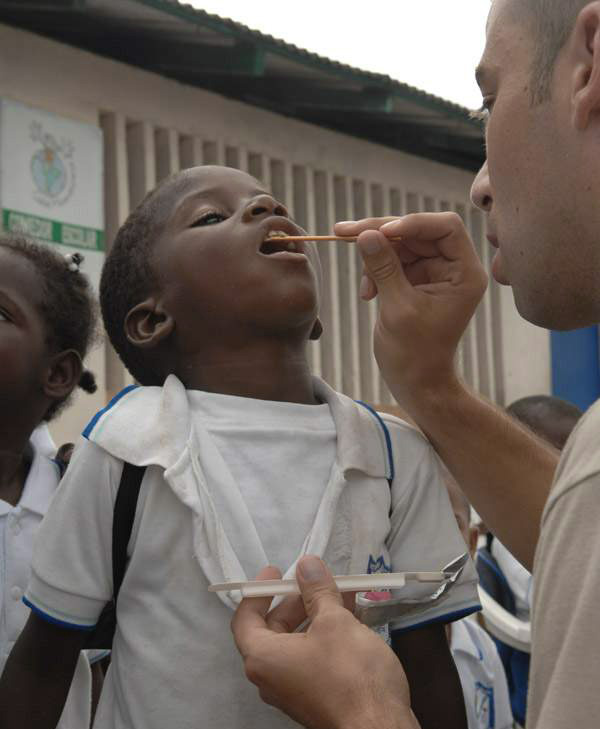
Photo essay: Show and care

Senior Airman David Evans assists dental professionals with fluoride treatment after a band performance June 10 at Tumaco, Colombia. The band performed for the students, and then the children were taught the importance of dental hygiene at the Cuidadela Mixtra Escuela as part of Continuing Promise 2009. The humanitarian mission combines U.S. military and interagency personnel, nongovernmental organizations, civil service mariners, academics and partner nations to provide medical, dental, veterinary and engineering services afloat and ashore alongside host nation personnel. Airman Evans is an Air Force South Band member deployed with Military Sealift Command hospital ship USNS Comfort.